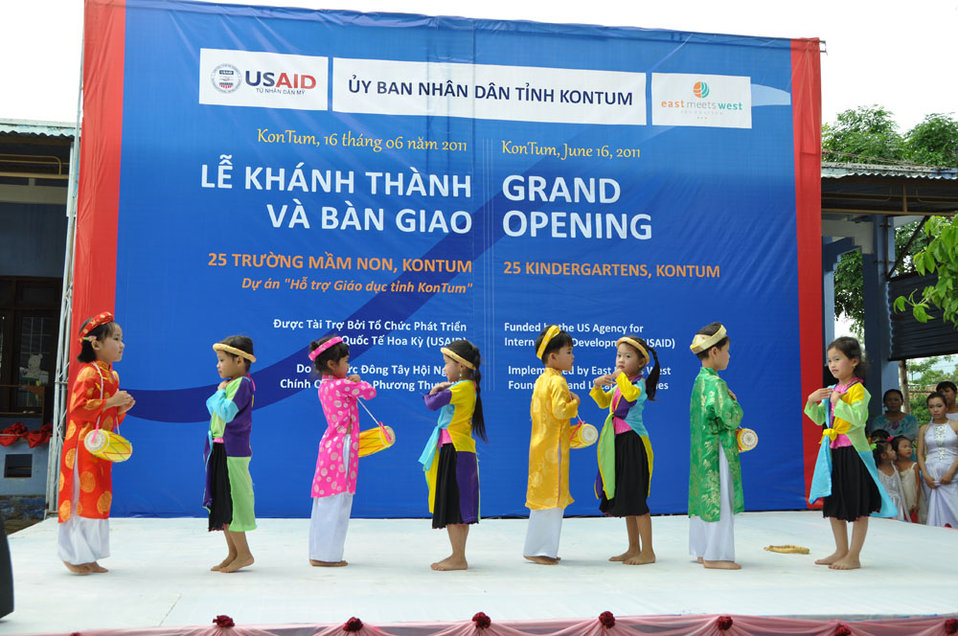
Children celebrate 25 refurbished and expanded kindergartens.